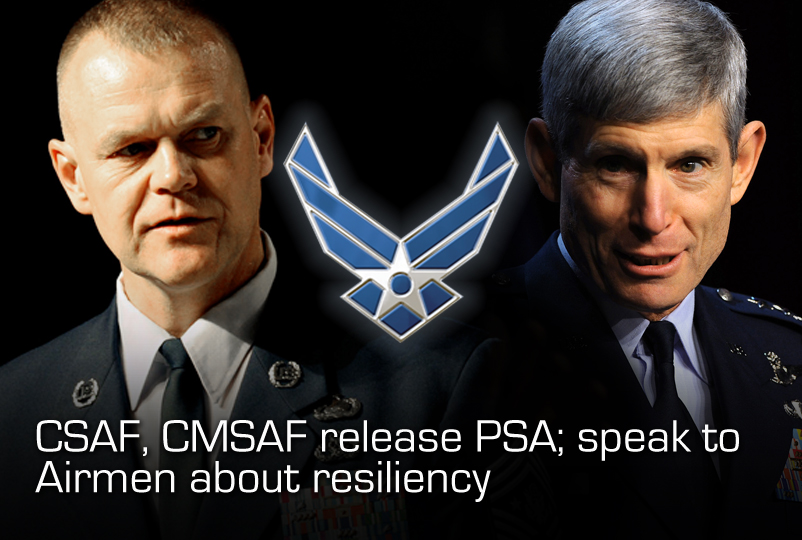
CSAF, CMSAF release suicide prevention PSA's